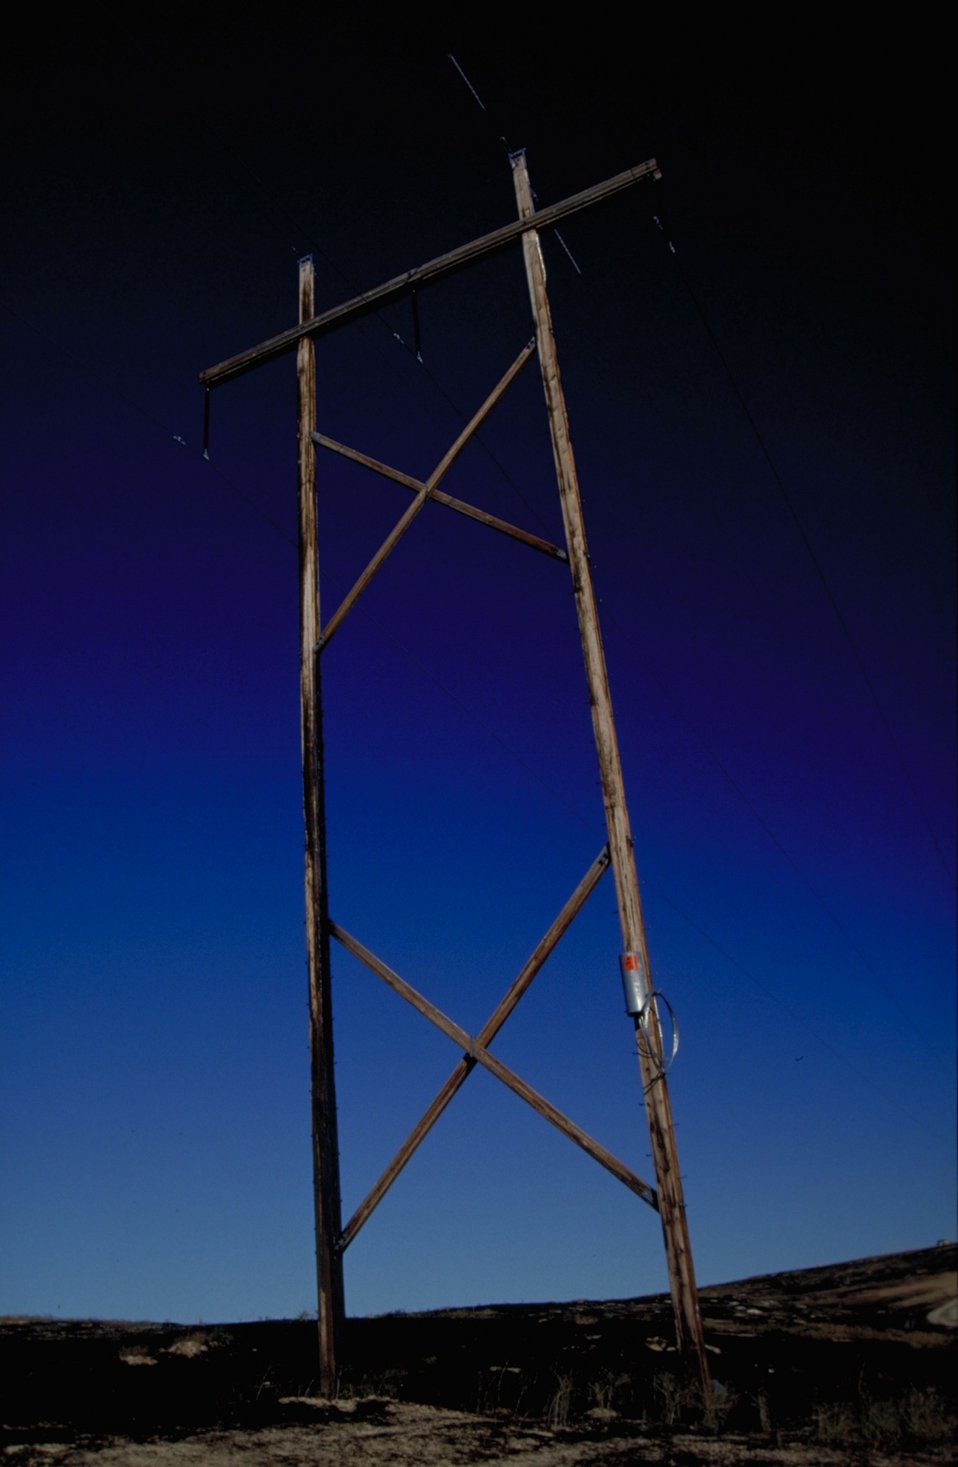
Burnt powerline Fire Season 2000 Lower Snake River District LSRD